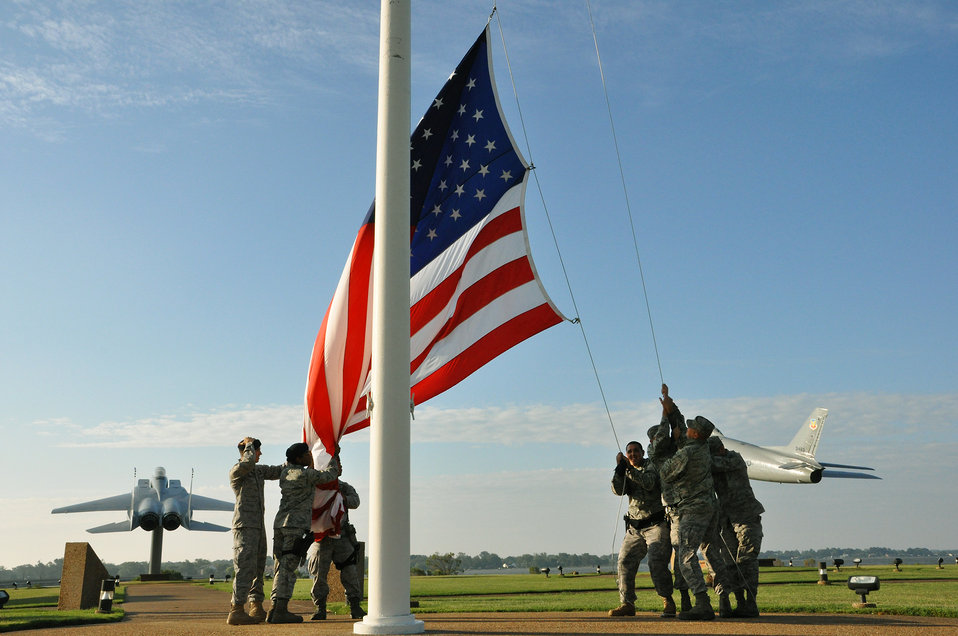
The morning after

Airmen with the 633rd Security Forces Squadron and 633rd Civil Engineer Squadron raise the U.S. flag at Joint Base Langley-Eustis, Va., Aug. 28, 2011, following Hurricane Irene. The hurricane caused widespread flooding and power outages throughout the state.